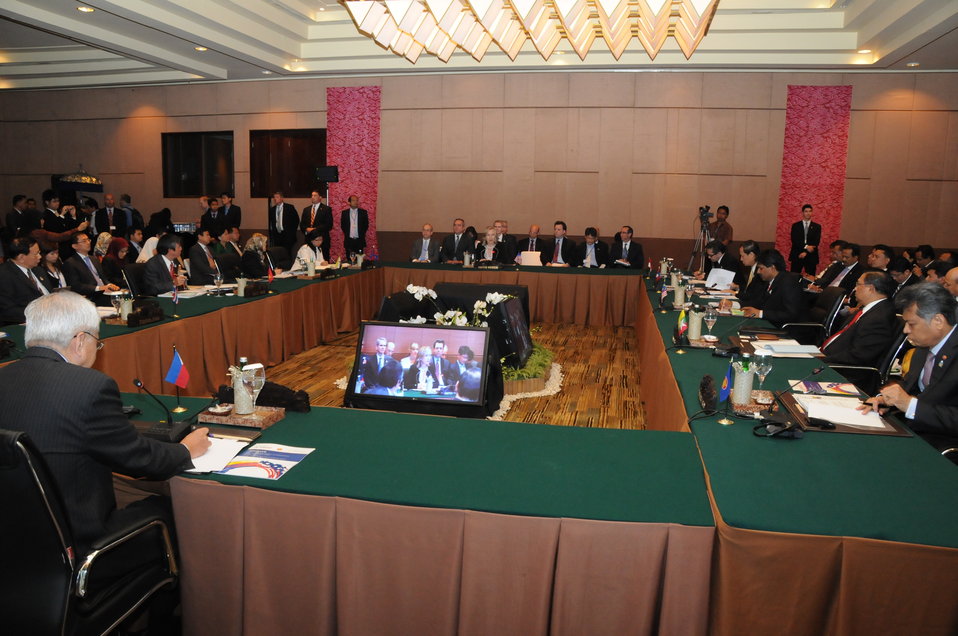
Secretary Clinton Participates in the U.S.-ASEAN Ministerial Meeting

U.S. Secretary of State Hillary Rodham Clinton participates in the U.S.–ASEAN Ministerial Meeting in Bali, Indonesia, on July 22, 2011.